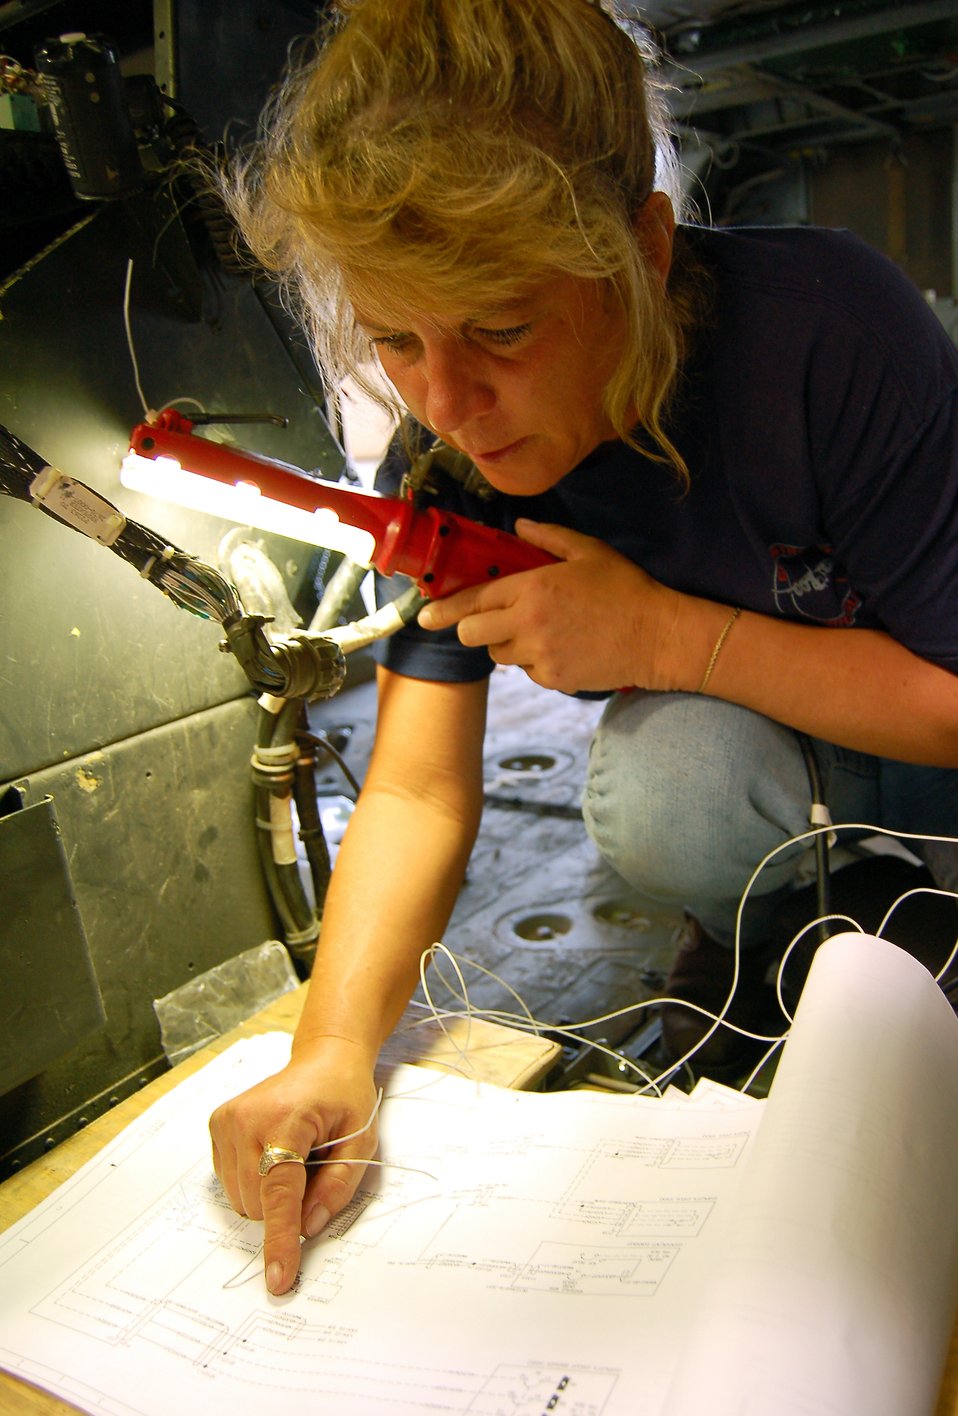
Pave Hawk Upgrade

Dawnmarie Squires, an avionics technician with Cygnus Aerospace Inc., studies an HH-60G wiring diagram used to install a Night Vision Imaging System lighting upgrade March 26. The Pave Hawk she is upgrading is assigned to the 41st Rescue Squadron at Moody Air Force Base, Ga.